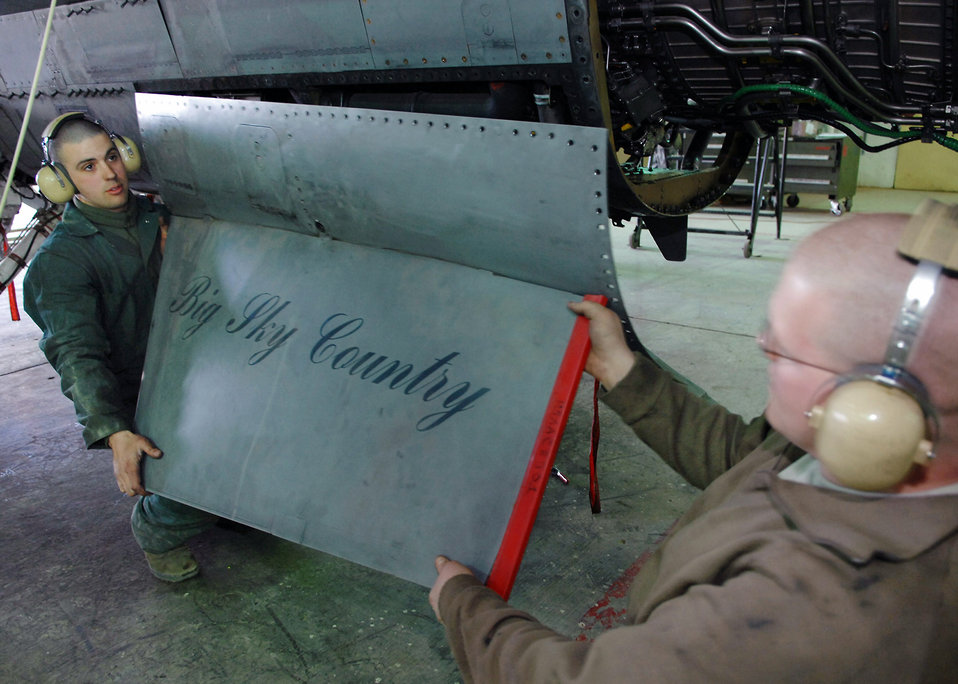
Tune-up time

Senior Airmen Adam Fink and Christopher Jaeger remove the left ventral fin of an F-16 Fighting Falcon Feb. 22 at Balad Air Base, Iraq. During a phase inspection, all panels and covers are taken off of the aircraft for preventative maintenance on the aircraft systems and equipment. The aircraft crews fly missions in support of Operation Iraqi Freedom. Both Airmen are 332nd Expeditionary Maintenance Squadron crew chiefs deployed from the Wisconsin National Guard.